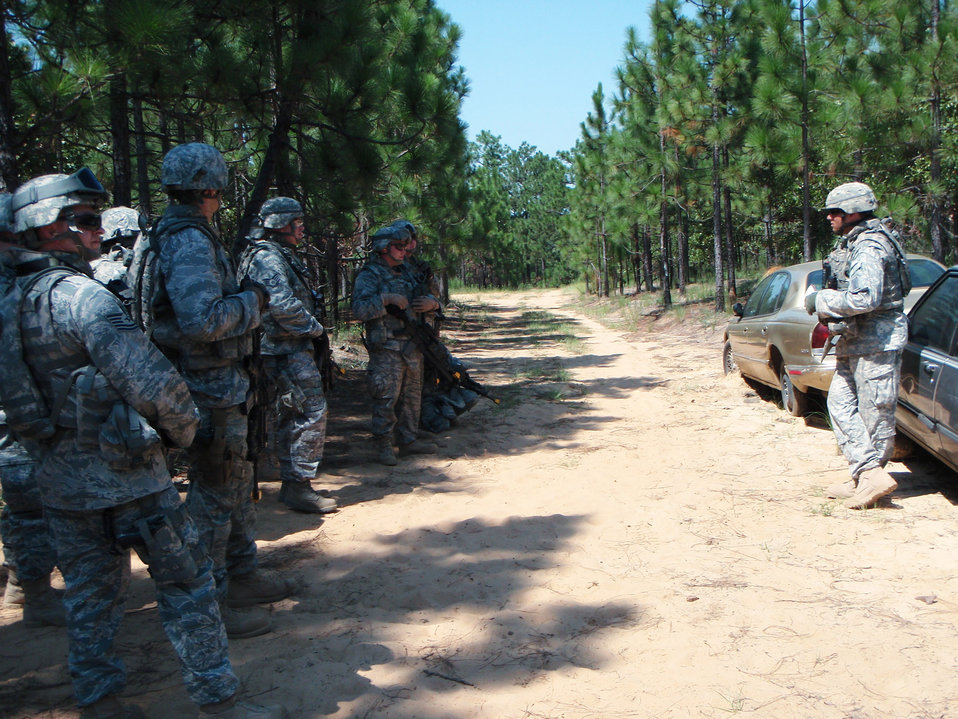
Airmen and Soldiers train for Zabul Provincial Reconstruction Team

Army Sgt. Frank Parsons explains the characteristics of vehicle-borne IEDs to members of the Zabul Provincial Reconstruction Team. The team along with 11 other reconstruction teams are training at Fort Bragg, N.C., for an upcoming deployment. Sergeant Parsons is a 189th Infantry Brigade instructor.